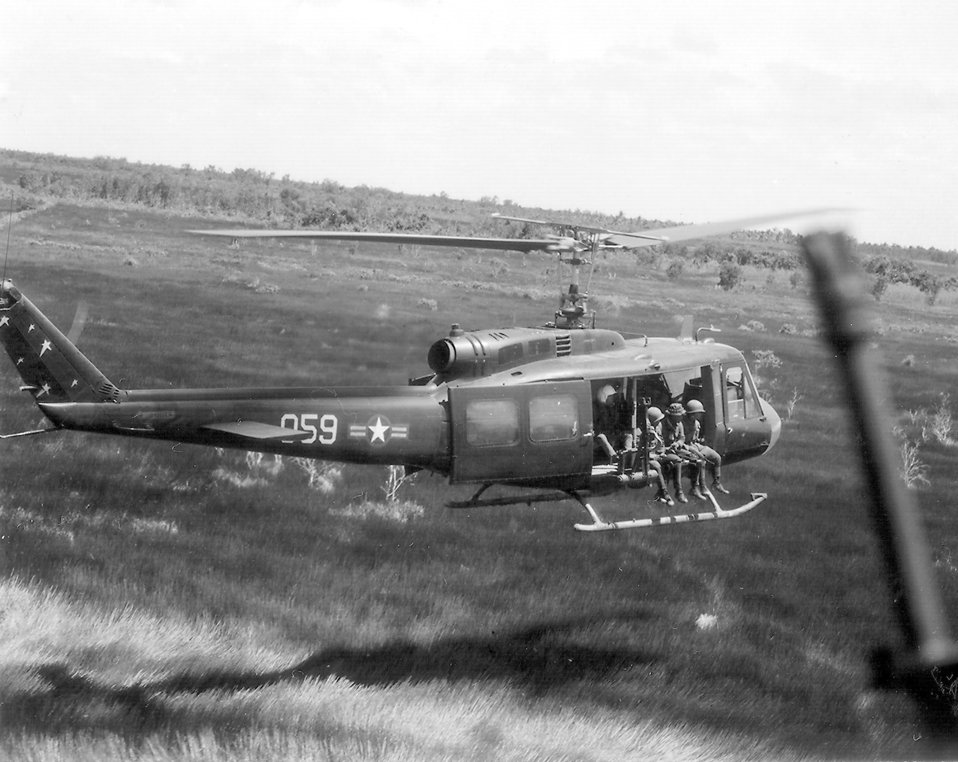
Vietnam War

MEKONG DELTA, Vietnam -- An Air Force crew from the 211th Helicopter Squadron fly on a combat assault mission July 18, 1970 in a UH-1 Helicopter over southeastern Asia.